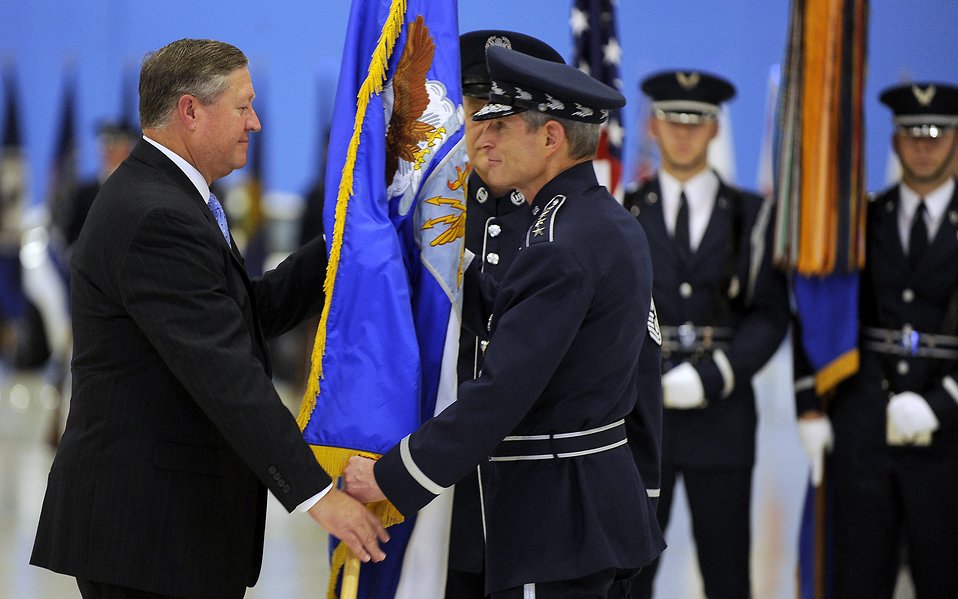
Farewell

Gen. Norton Schwartz relinquishes the chief of staff flag to Secretary of the Air Force Michael Donley during a ceremony at Joint Base Andrews, Md., Aug. 10, 2012. Schwartz served in the Air Force for 39 years, the last four as the Air Force's senior uniformed leader.